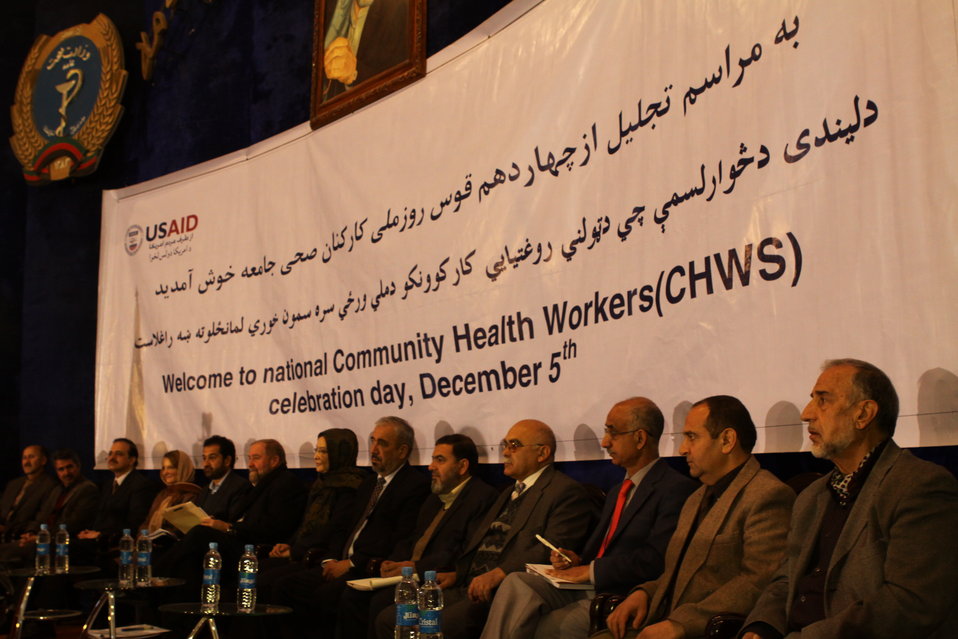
Community Health Workers Celebrated

Kabul, Afghanistan | December 5, 2010 — In support of the United Nations designated International Volunteer Day for Economic and Social Development, Afghanistan’s Ministry of Public Health celebrated its annual Community Health Worker Day today. Acting Minister of Public Health Dr. Suraya Dalil, USAID Senior Deputy Mission Director Robert Hellyer, other government officials, and international donors joined in recognizing the critical contribution of community health workers in Afghanistan and encouraging them to continue their voluntary support to their communities.
The event praised the contributions of the more than 22,000 volunteers throughout the country who deliver community level health-education, counseling, and services out of village health posts located in private homes. The Ministry of Public Health envisioned that community-based healthcare programs will actively encourage communities and families to adopt healthy lifestyles and behaviors, and provide families access to high quality and socially acceptable preventative medicine and life-saving services.
“We have 22,000 community health workers in Afghanistan that are able to implement the basic and standard medicines. They all have been trained through a job description,” said Minister Dalil. Addressing the health workers, she added, “I am proud and feel powerful that I have people like you.”
USAID-funded health projects collaborate closely with the Ministry of Public Health to improve the health and nutritional status of Afghans, provide quality primary healthcare, and promote healthy behaviors at the community and household-levels. USAID supported the training of more than 9,000 of the volunteer community health workers currently working in Afghanistan.
“On behalf of the American people, I congratulate the Community Health Workers for their diligence to gain the skills and knowledge necessary to serve their communities in this important role,” said USAID Senior Deputy Mission Director Hellyer. “USAID strongly supports community based health care and believes that quality community-based health services are essential to reaching Afghanistan’s Millennium Development Goals.”
To support the Basic Package of Health Services, USAID assisted in developing the community health worker training manual, helped train community health worker supervisors and master-trainers, facilitated in-service training, and produced and developed reporting tools, job aids, and education materials.